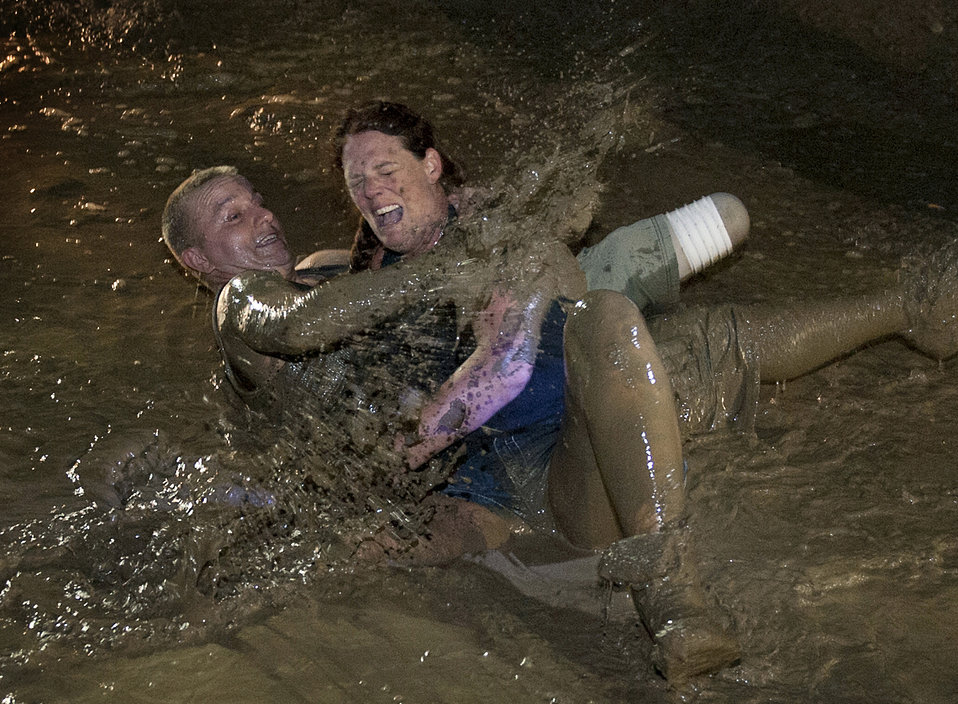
Wounded Warrior Care

Army Sgt. James Nickelson and Angela Wright jump in a mud pit during a mud bogging event in Gore, Va., Sept. 15, 2012. Nickelson is with Battle Company, Warrior Transition Battalion, Bethesda, Md.